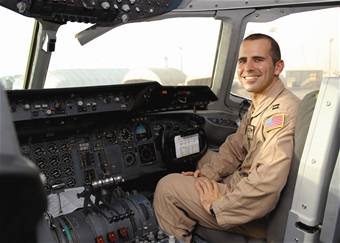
Brothers meet at 20,000 feet

Capt. Jason Moraes prepares to head out on a mission in a KC-10 Extender Sept. 17 from an air base in Southwest Asia. He was recently reunited with his brother at 20,000 feet over Afghanistan during a combat sortie Sept. 10. The brothers had been apart for a year when they met in the sky for the 10-minute reunion. Captain Moraes is a KC-10 pilot for the 908th Expeditionary Air Refueling Squadron.